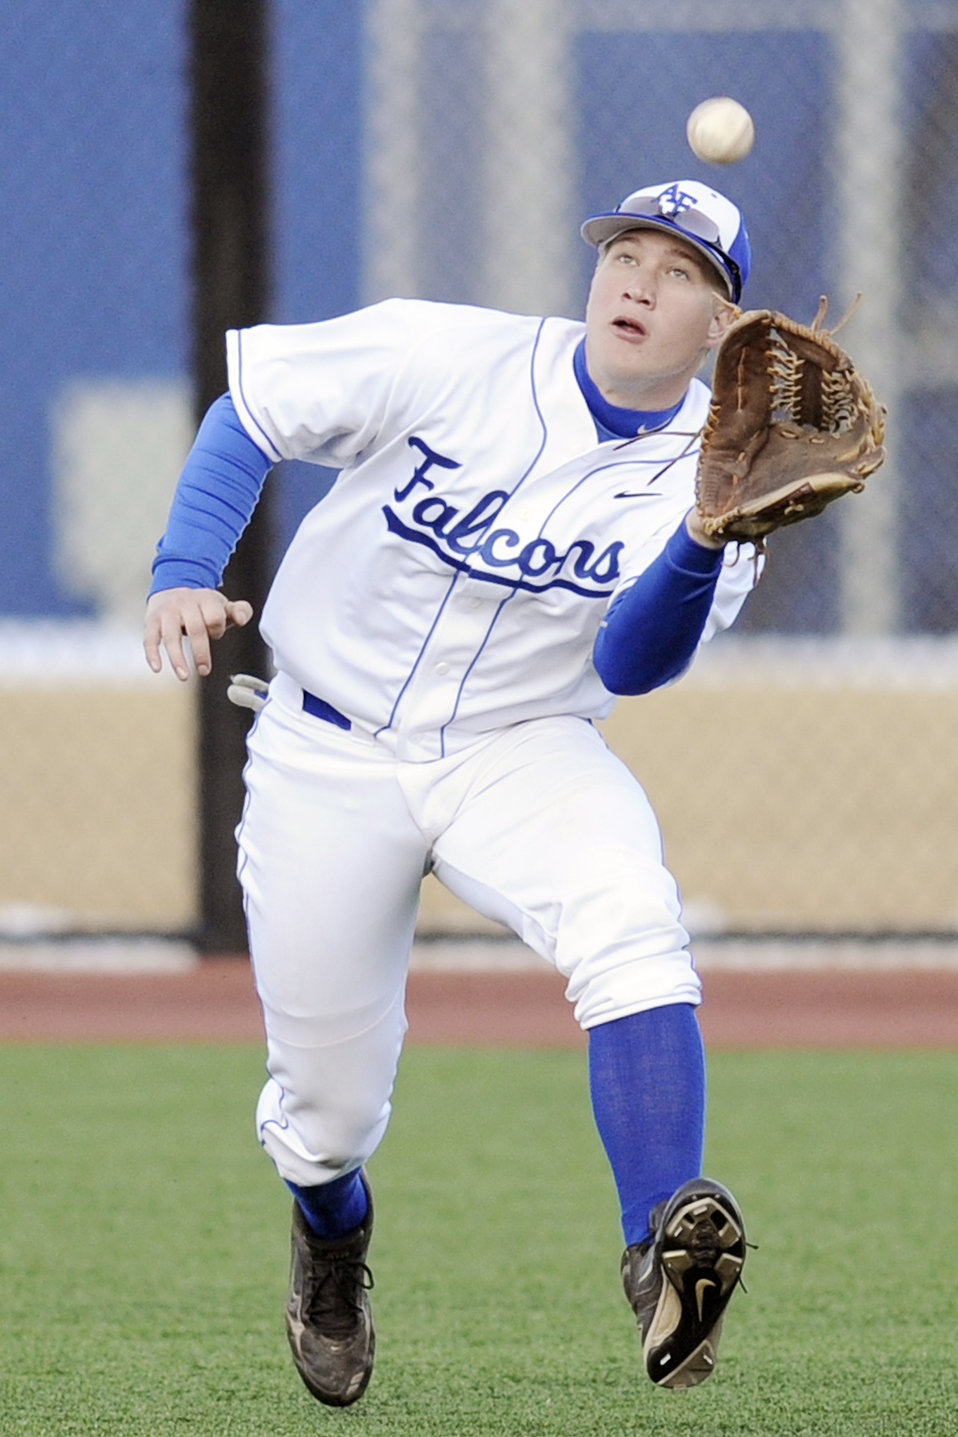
Falcons win baseball home opener

Falcon sophomore Blair Kessler snags a line-drive as the Air Force baseball team racked up a 15-5 victory over Colorado Christian in its home-opener at the Academy's Falcon Field in Colorado March 2, 2010. The win improved the Falcons to 2-6 and dropped the Cougars to 6-9.